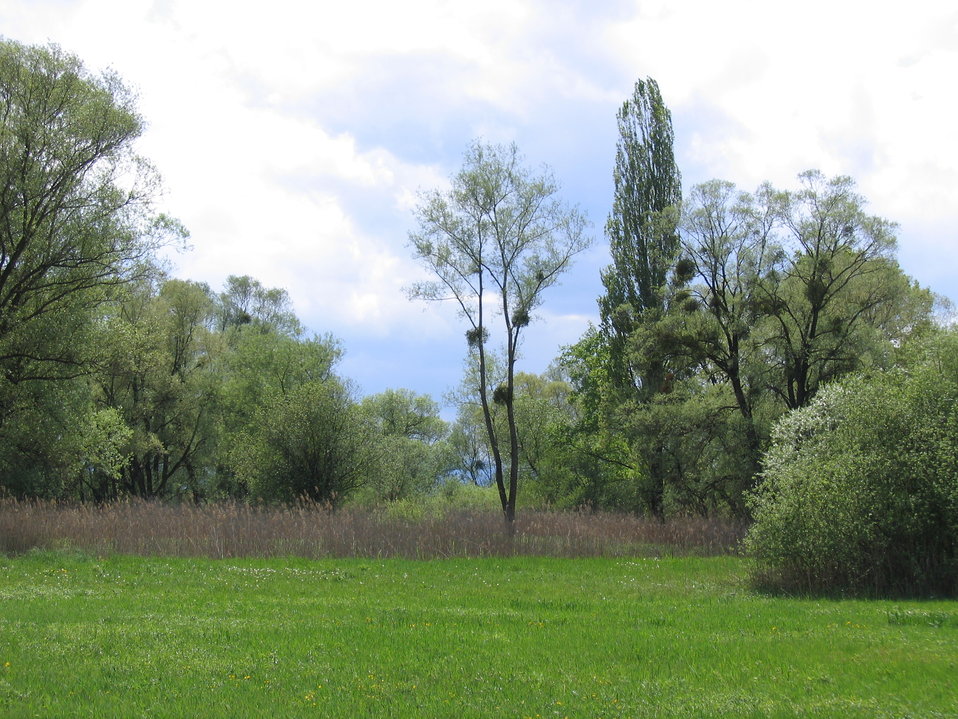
Deutsch: Deutschland - Baden-Württemberg - Bodenseekreis - Eriskirch: Riedwiese im Eriskircher Ried